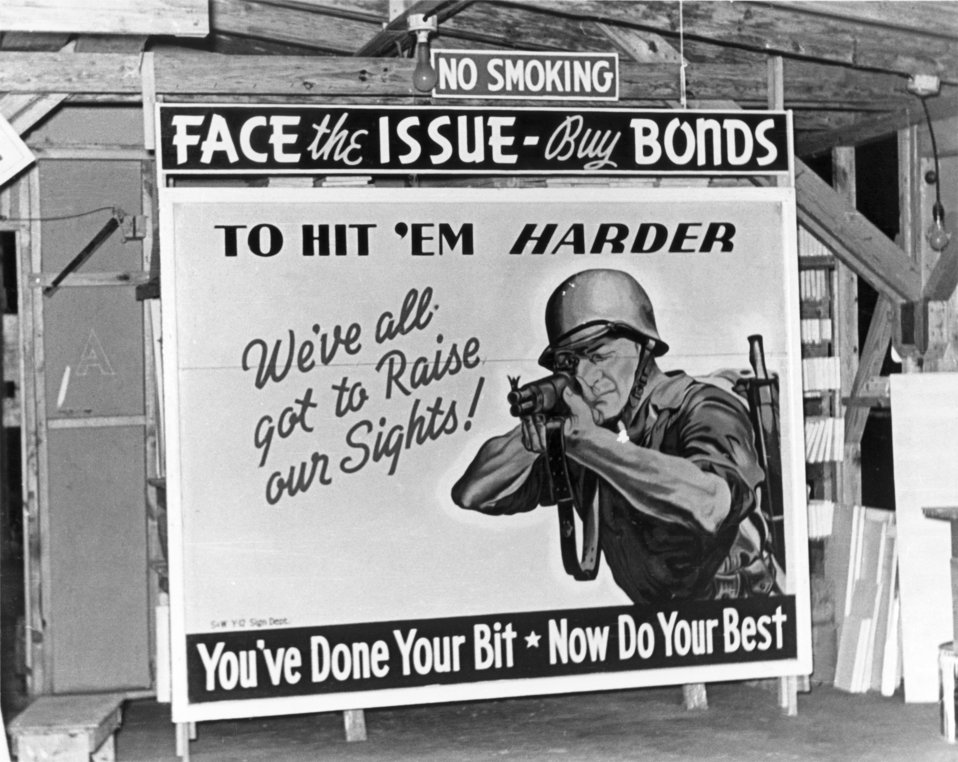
Billboard in Oak Ridge

330-42 DOE photo by Ed Westcott

Billboard in Oak Ridge Tennessee 10/13/44